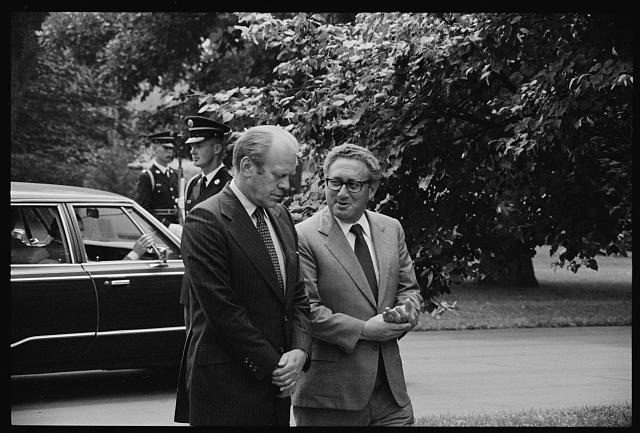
Secretary Kissinger with President Ford

Secretary of State Henry Kissinger conversing with President Gerald Ford on the grounds of the White House, Washington, D.C. 8/16/74